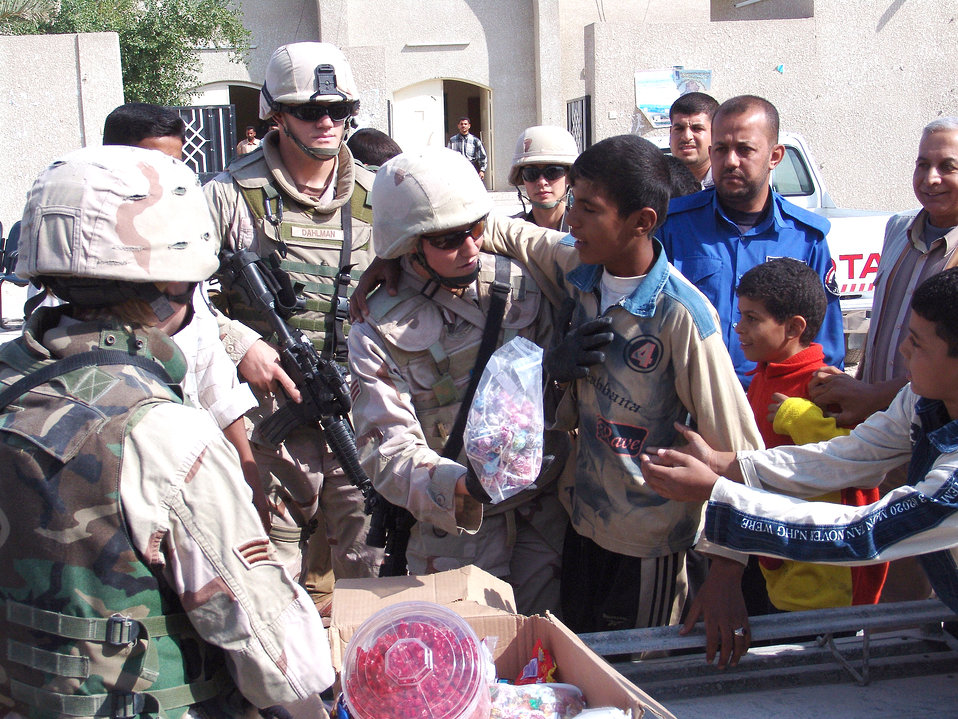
Humanitarian relief

UMM QASR, Iraq (AFPN) -- Senior Airman Jana Sautter hands out some treats to Iraq children during a humanitarian relief mission in Umm Qasr, Iraq. Coalition forces delivered more than a thousand school supplies and toys to the children Nov. 14. Airman Sautter is assigned to the 568th Expeditionary Security Forces Squadron.